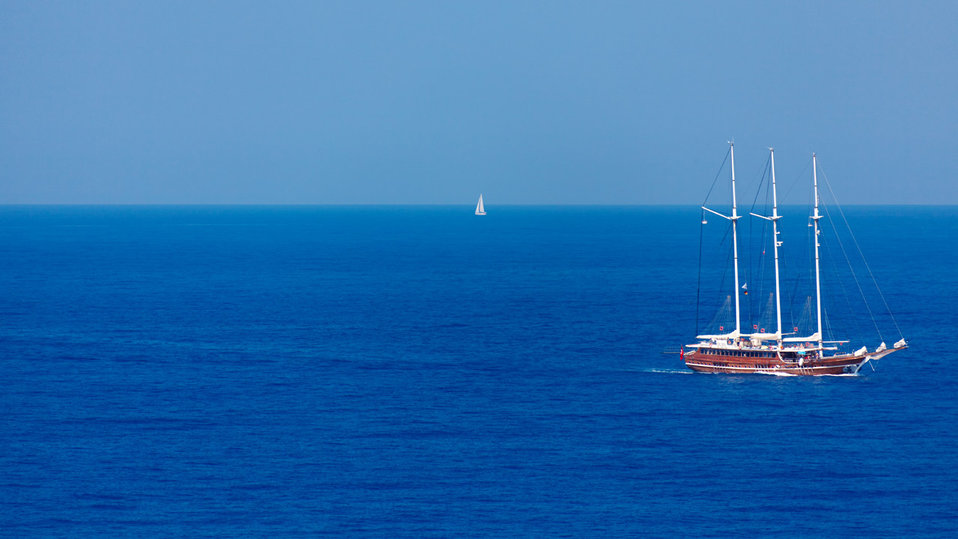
Boats in sea

Two boats at the blue sea.